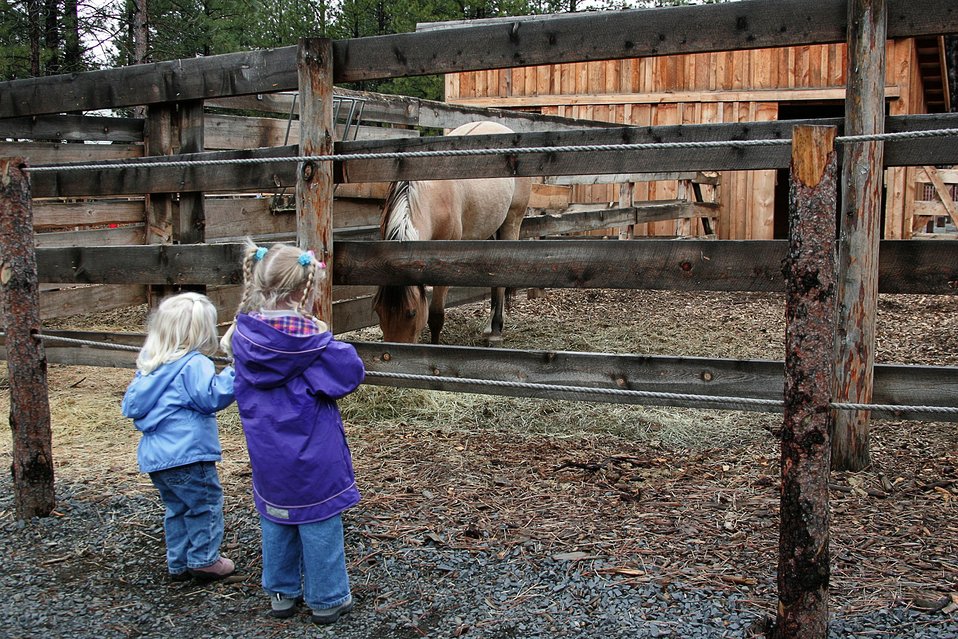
Young visitors the to the High Desert Museum watch Spirit, a Kiger wild horse awaiting adoption.